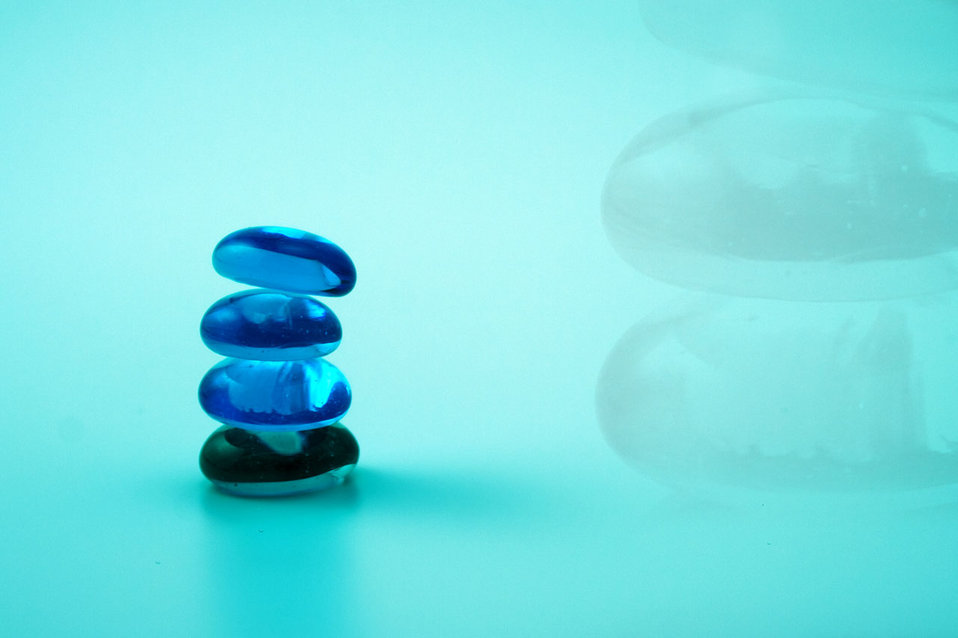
Balancing pebbles

Several balancing glass pebbles.